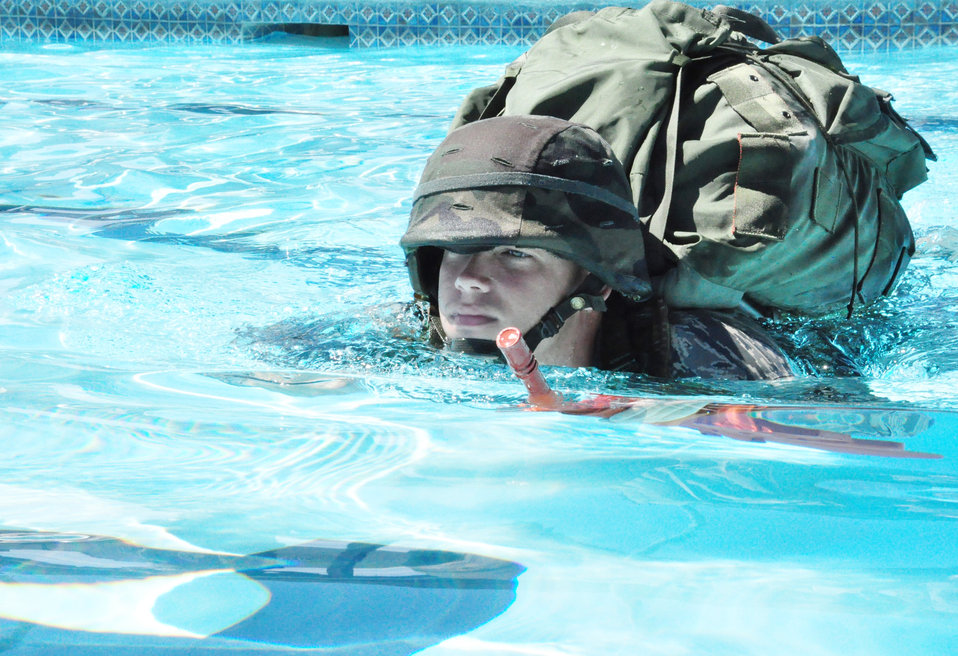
Dog paddling to safety

Staff Sgt. Brian Peters practices using a travel stroke to swim with full equipment on during water survival training at the Soto Cano Air Base, Honduras, swimming pool Oct. 22, 2009. Sergeant Peters and other personnel recovery team members trained on a variety of water-based tactics to prepare them to operate safely in rescue and recovery missions.